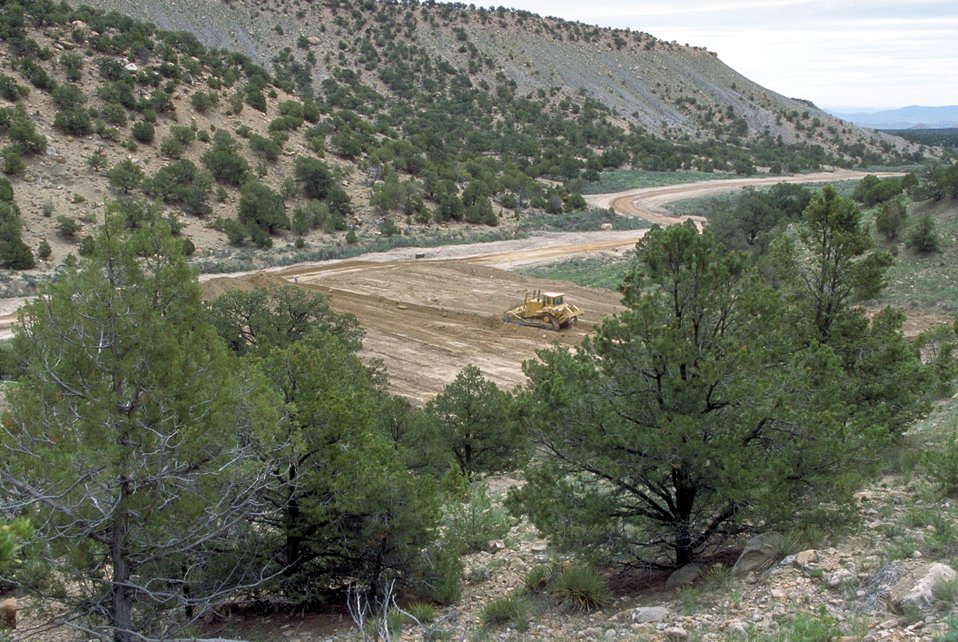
Building a drill pad for coal bed methane production near price, Utah.